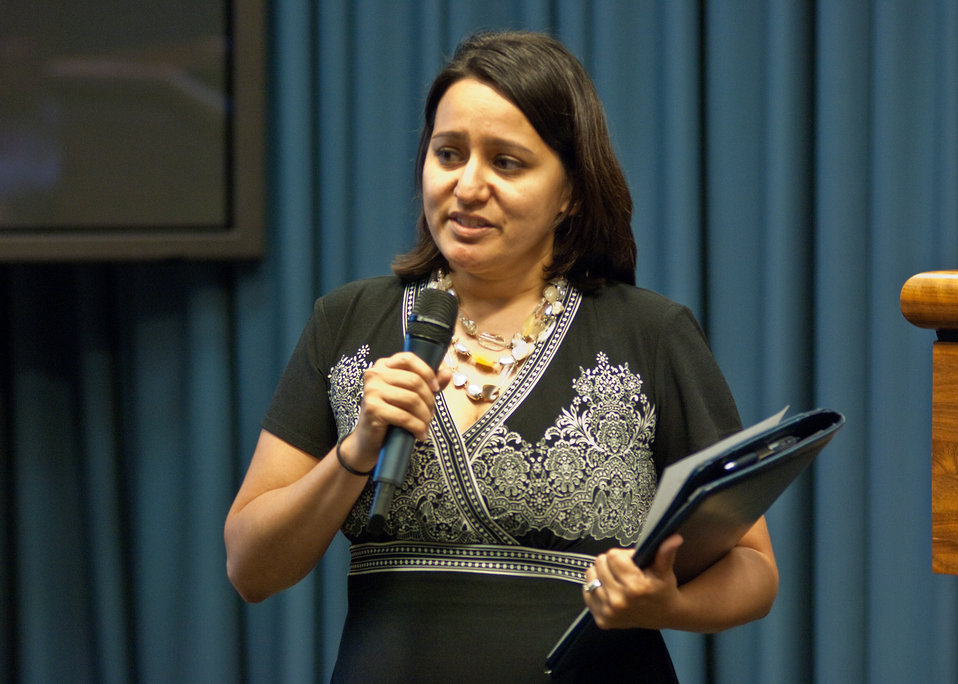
Sandra Cortez, Hispanic Services Institute greets students at the USDA HACU and 1994 Tribal College Summer Internship Orientation Program at the Department of Agriculture in Washington, DC, Monday, June 7, 2010. USDA Photo 10di1390-2.